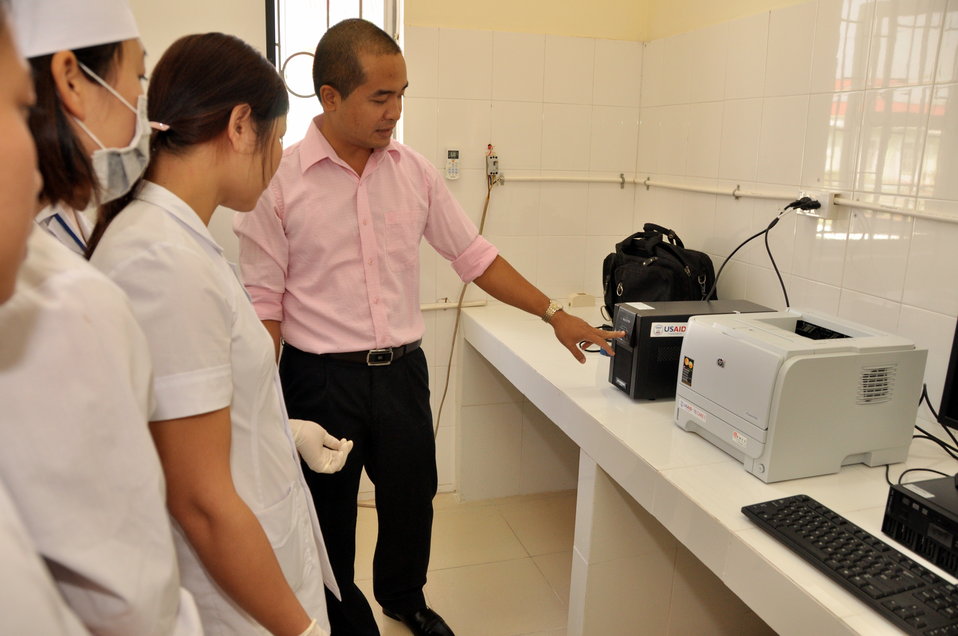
USAID supports new rapid detection TB equipment